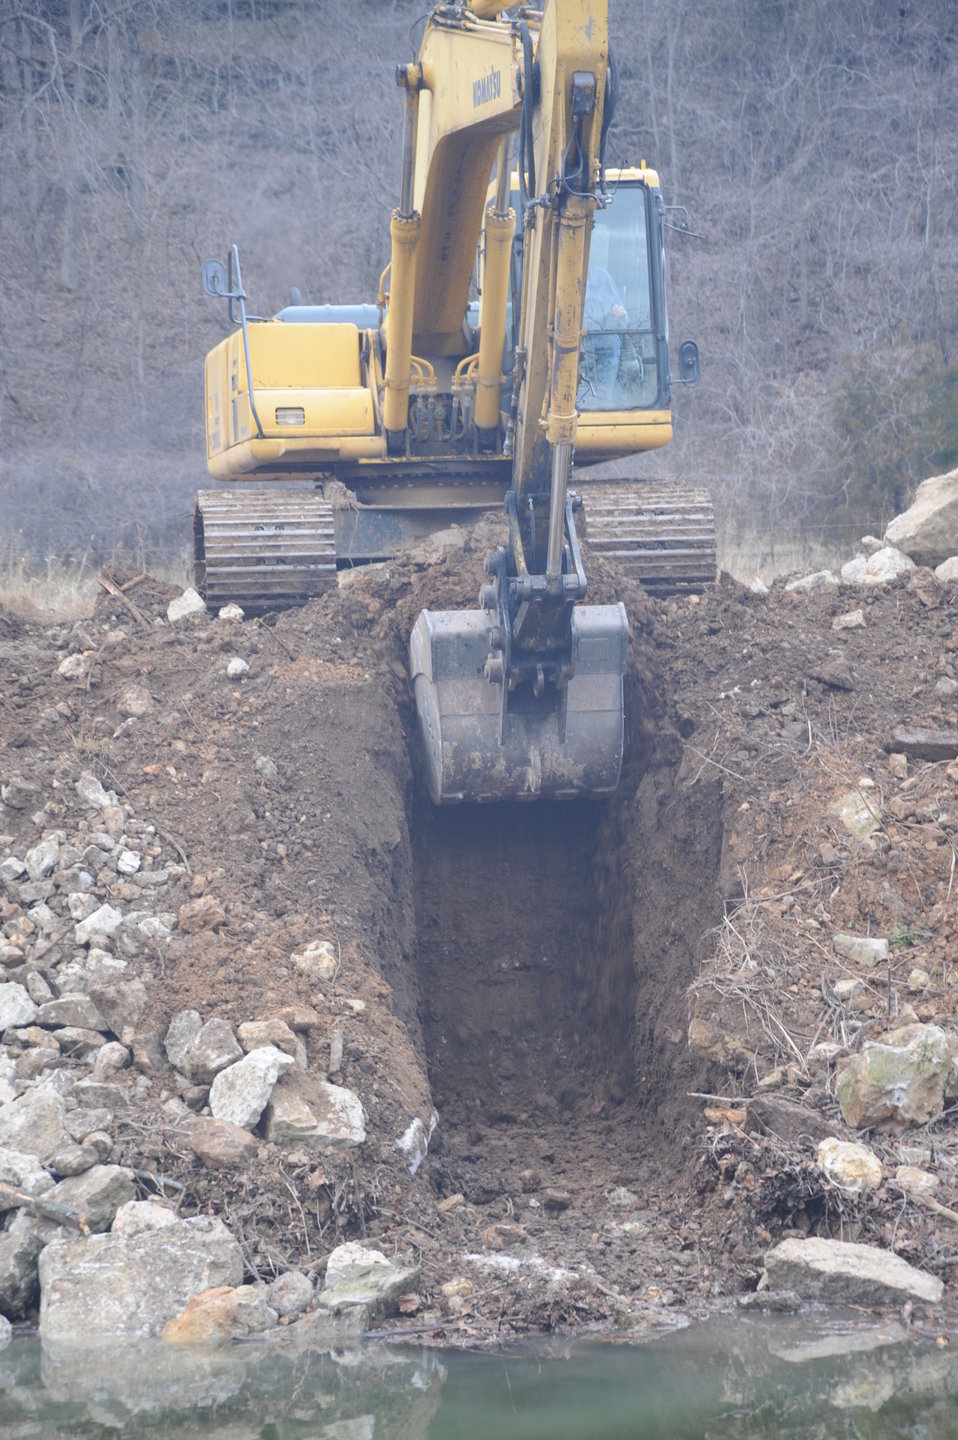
Digging a key to anchor the longitudinal fill stone toe protection.